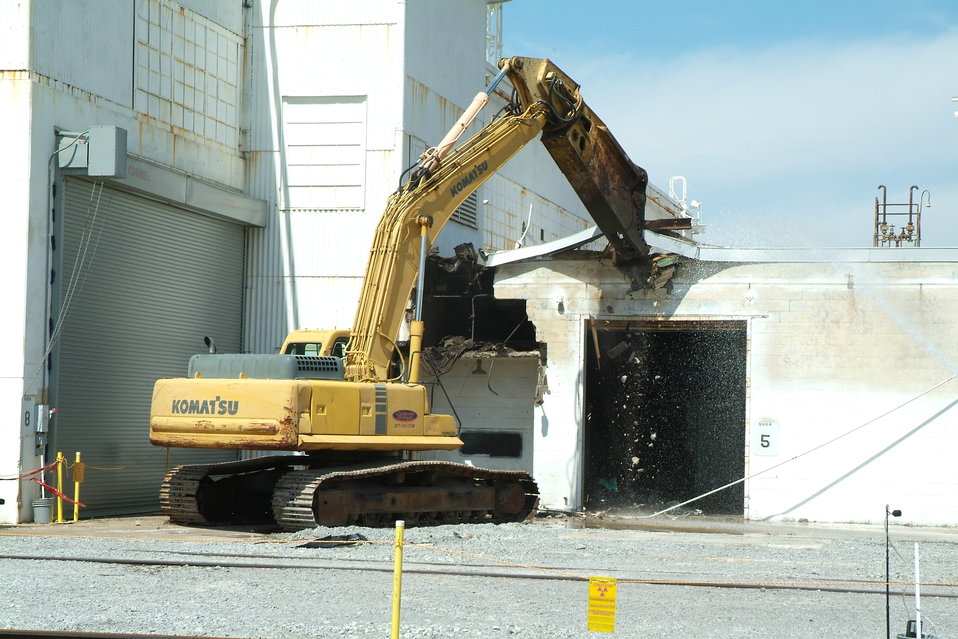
Crane Work at the Paducah Site

Heavy equipment starts to demolish the eastern third of the C-410 Feed Plant in April. C-410 is one of three cleanup and demolition projects at the Paducah Site expedited with about $80 million in Recovery Act funding.